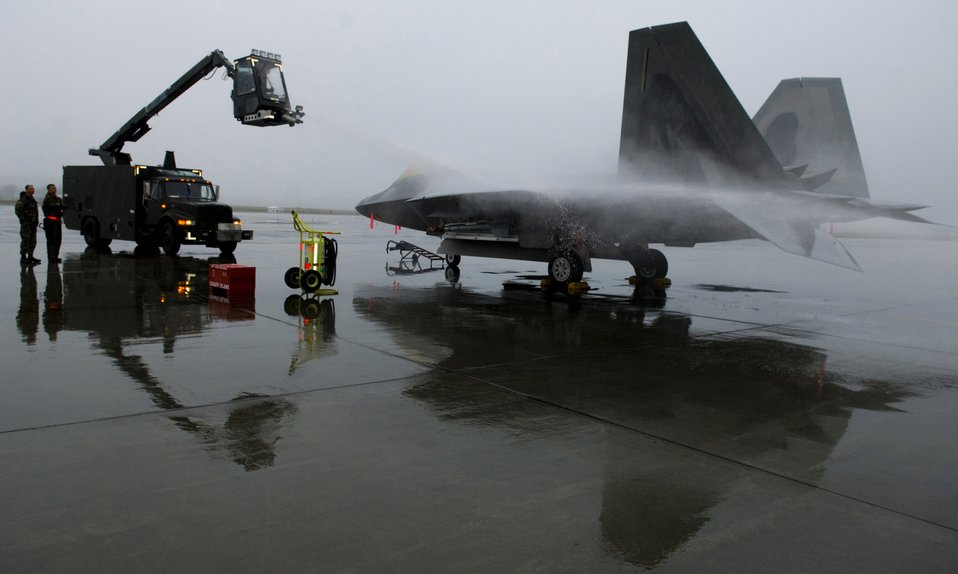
Getting ready for winter in Alaska

Maintainers at Elmendorf Air Force Base, Alaska, practice de-icing an F-22 Raptor Sept. 19 to prepare for the upcoming winter. The onset of light dustings of snow on the surrounding mountain ranges is a sign the Alaskan winter is just around the corner.